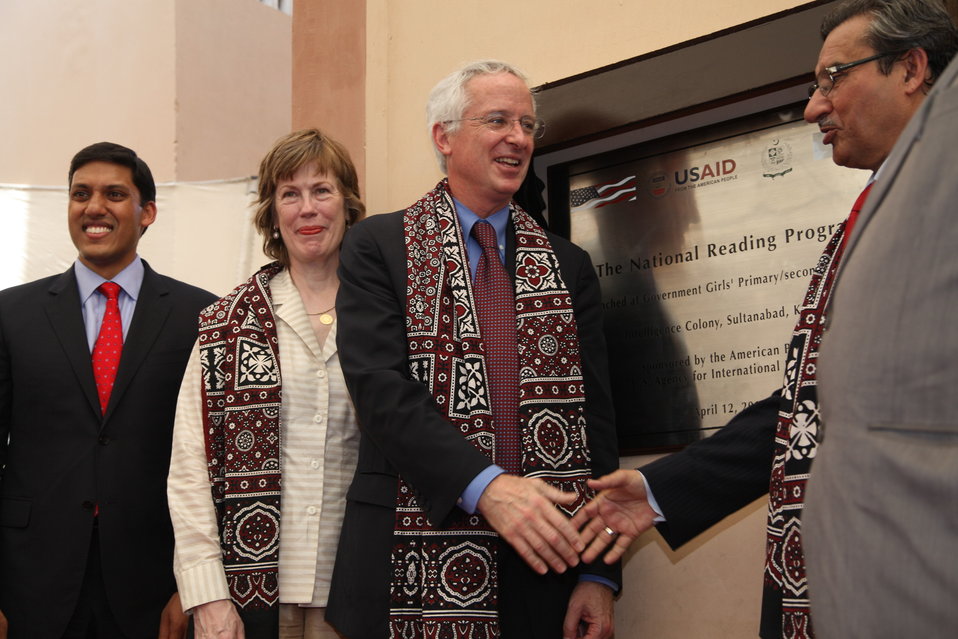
Launch of the USAID National Reading Program in Karachi on April 12, 2012.

Dr. Rajiv Shah, Dr. Marilyn Wyatt, Cameron Munter shaking hand Pir Mazhar-ul-Haq, Senior Minister Education and Literacy Department, Government of Sindh, on Inaugration.